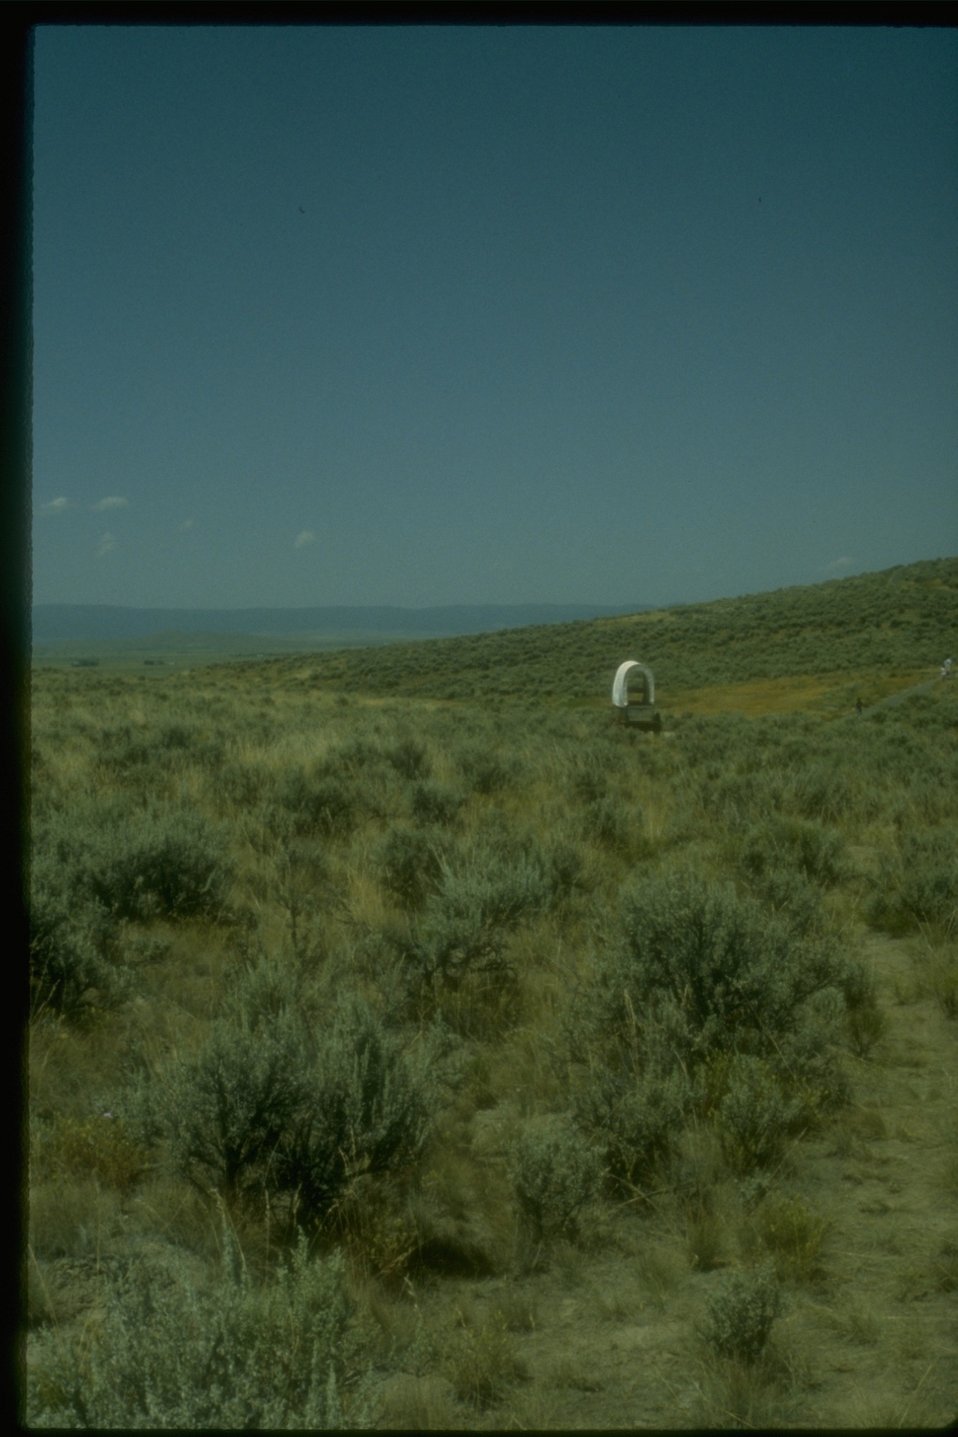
A covered wagon on the historic Oregon Trail near the NHOTIC.